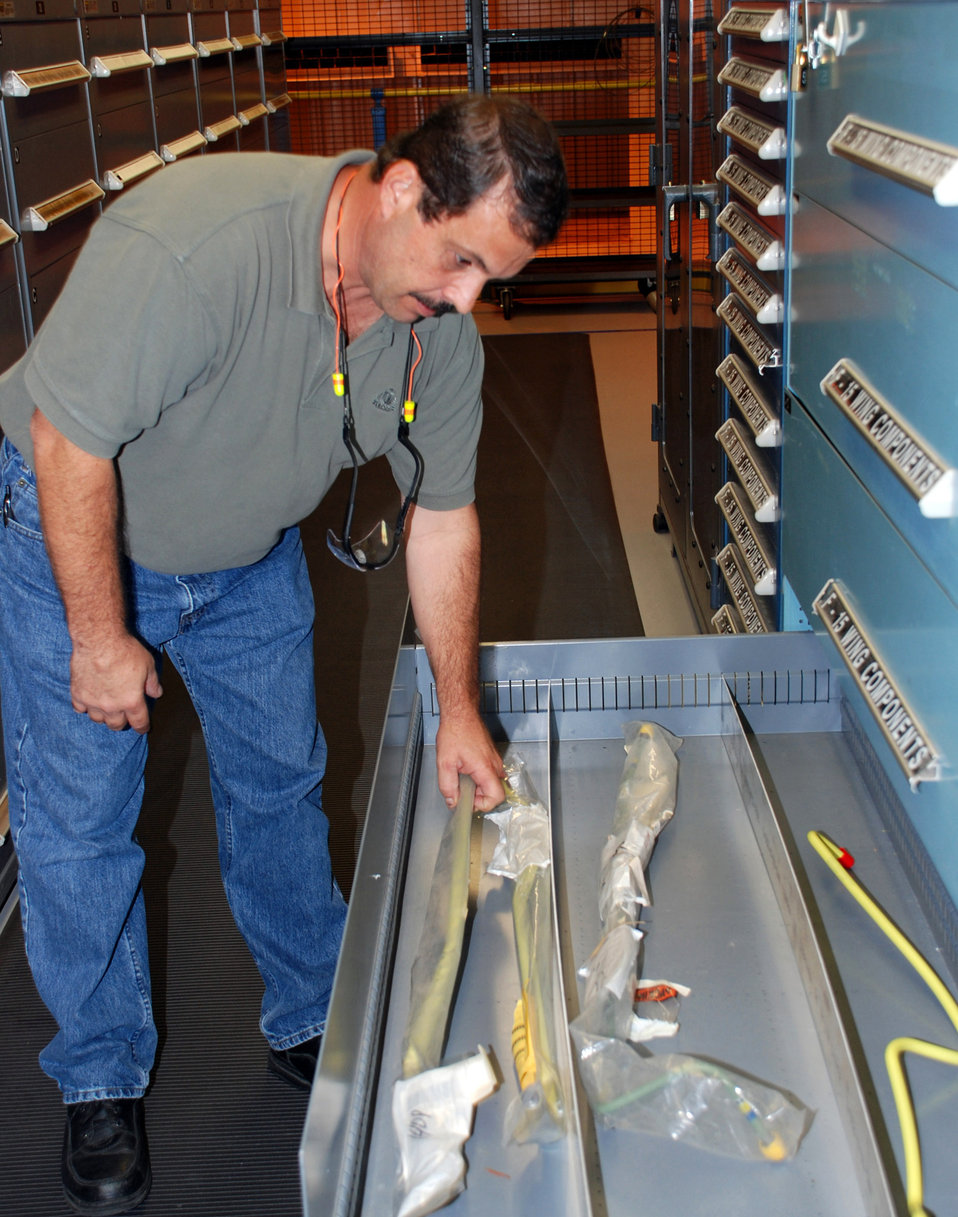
DLA-Warner Robins shop humming along following transition

Marcel Baril, Defense Logistics Agency supportability specialist, looks over the print stuffer list that was sent from Air Force employees in the F-15 wing shop. The list contains items needed to refurbish a wing.